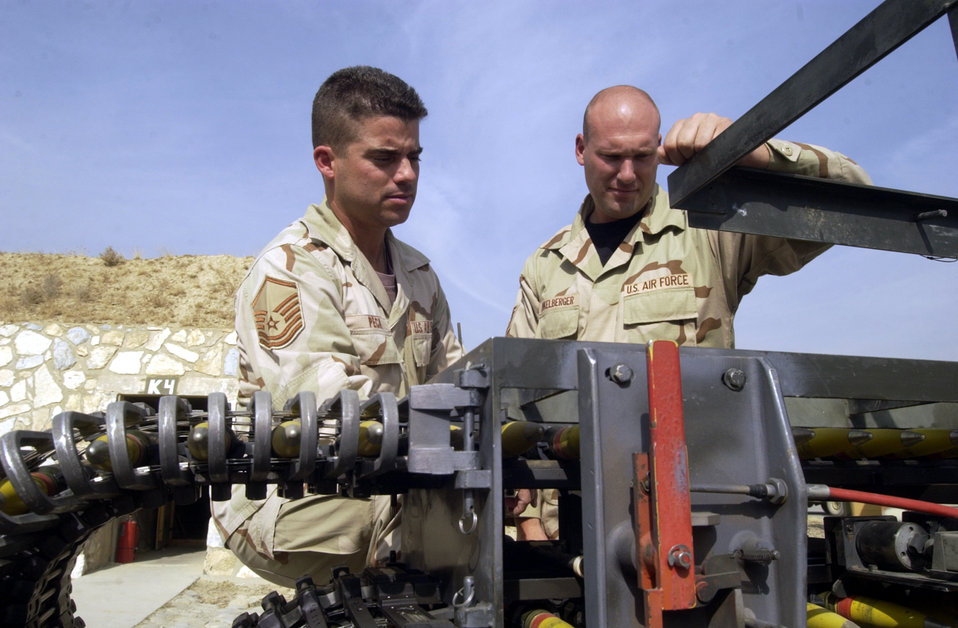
Ammo inspection

BAGRAM AIR BASE, Afghanistan -- Master Sgt. Marc Peck (left) and Tech. Sgt. Duren Dunkelberger inspect 30 mm ammunition rounds for defects as they pass by on a loading machine. The rounds will be loaded on an A-10 Thunderbolt II for combat here. Peck and Dunkelberger are assigned to the 455th Expeditionary Operations Group. Peck is part of Air and Space Expeditionary Force Blue deployed from Spangdahlem Air Base, Germany. Dunkelberger is part of AEF Silver deployed from Davis-Monthan Air Force Base, Ariz. Airmen with AEF Silver are replacing those with AEF Blue.